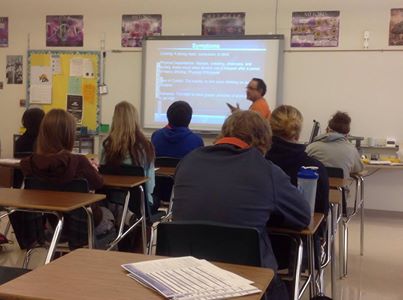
Drug facts week for ESCAPE Project in Wyoming